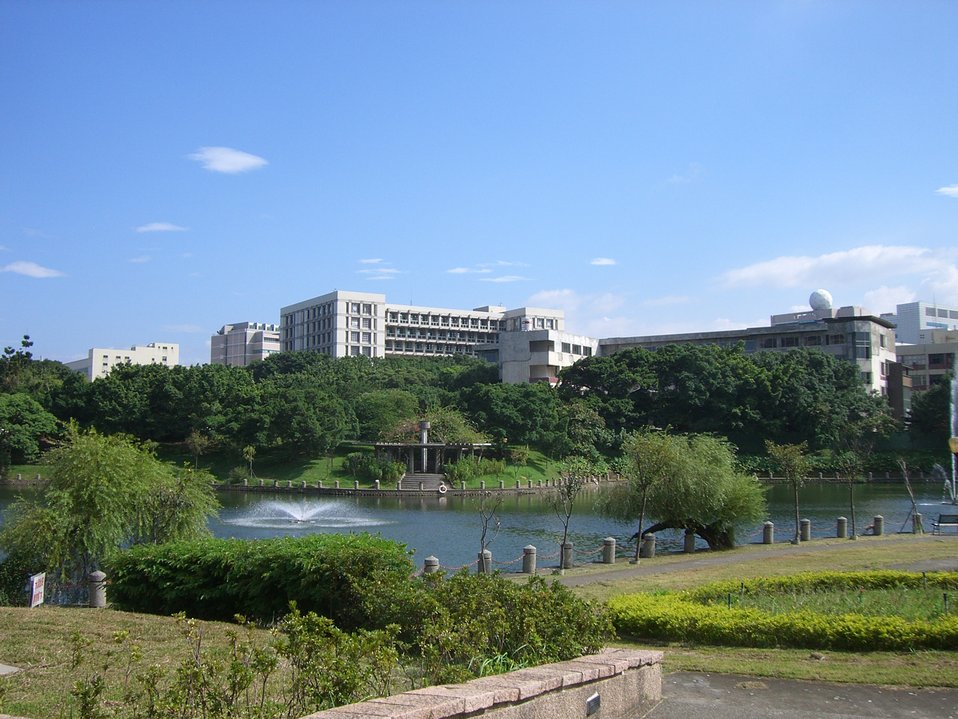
NCTU campus